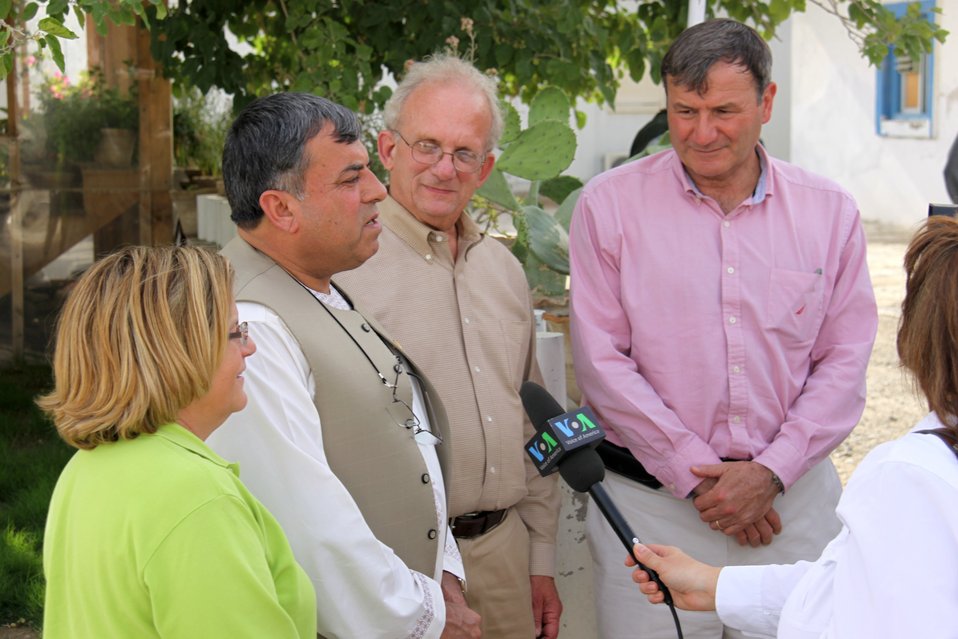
Meeting with Local Leaders in Kandahar